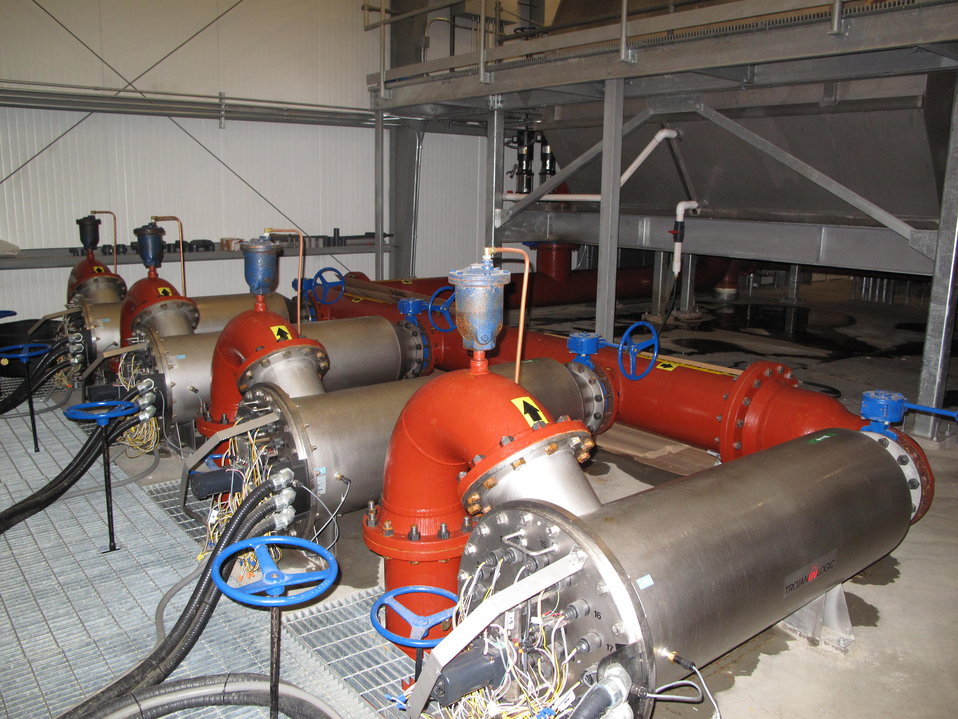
Leadville National Fish Hatchery

This is the last stage of filtration. Once the water passes through this last step, it is considered potable.